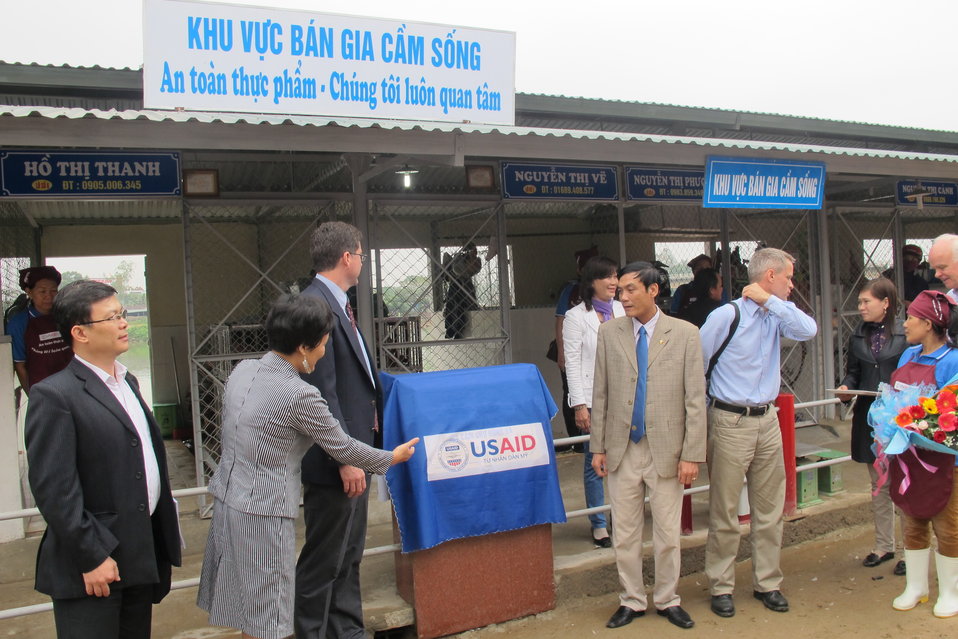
Promoting Hygiene and Sanitation at Dong Ha Poultry Market